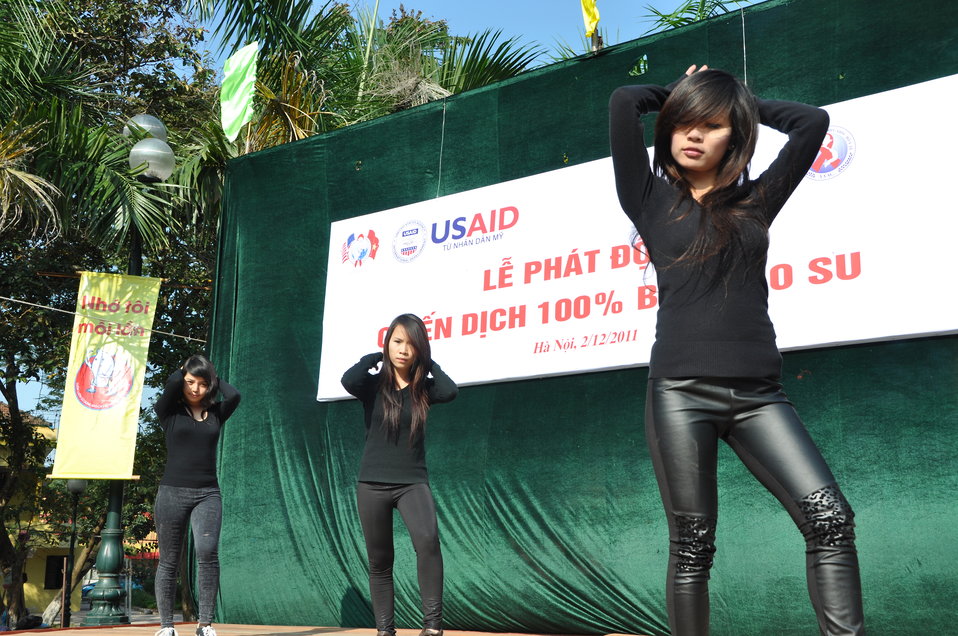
100% Condom Use Campaign Launch, Dec. 2, 2011